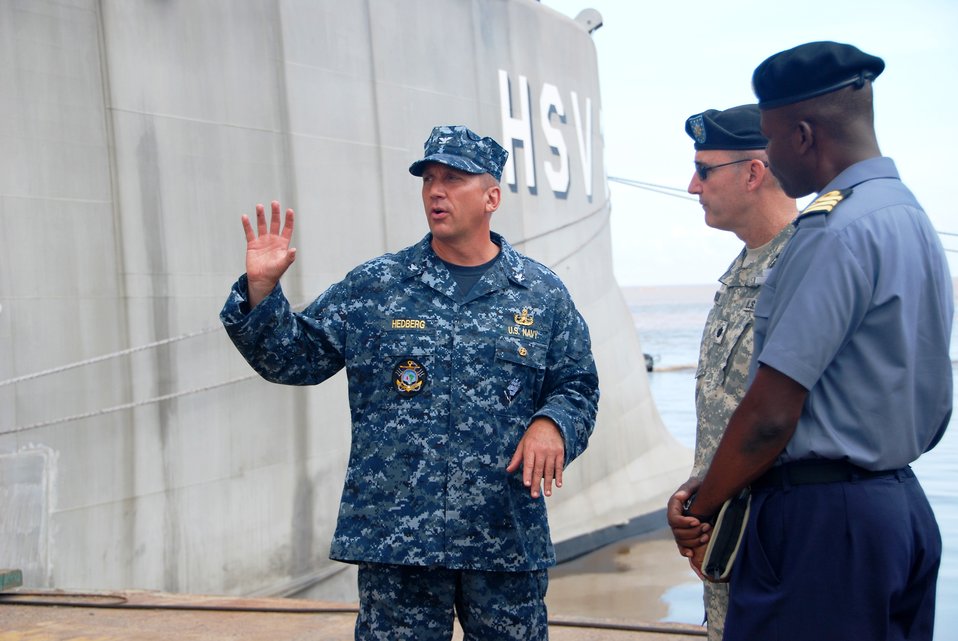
Guyana Coast Guard Lt. Col. Beaton Greets the HSV Swift

Guyana Coast Guard Lt. Col. Gary Beaton greets the HSV Swift when it arrived at port in Georgetown, Guyana, on August 29, 2010.